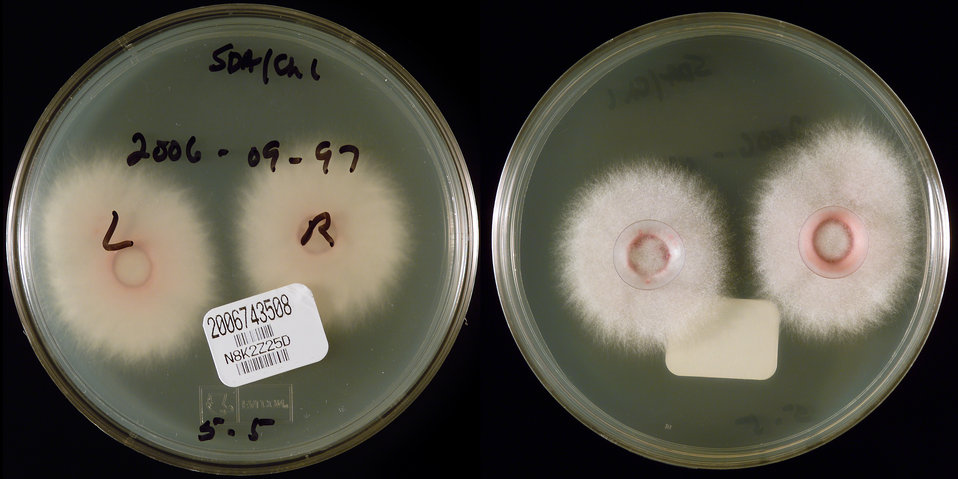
This image depicted two sides of a Petri dish, which had been inoculated with specimens consisting of the right and left contact lenses, visible on the culture medium, obtained from a Connecticut Fusarium keratitis-patient, and had subsequently grown a filamentous colony of Fusarium oxysporum fungal organisms. The type of agar medium in the case of this specimen was Sabouraud Dextrose (SAB). While it is not unusual for Fusarium to cause keratitis, it was the number of affected individuals, which had increased dramatically, predominantly in persons wearing contact lenses, that had warranted this epidemiologic study. The laboratory received cultures which came from two sources: Fusarium spp. isolated from the eyes of patients with fungal keratitis, and cultures from contact lenses, cases and/or lens solution.